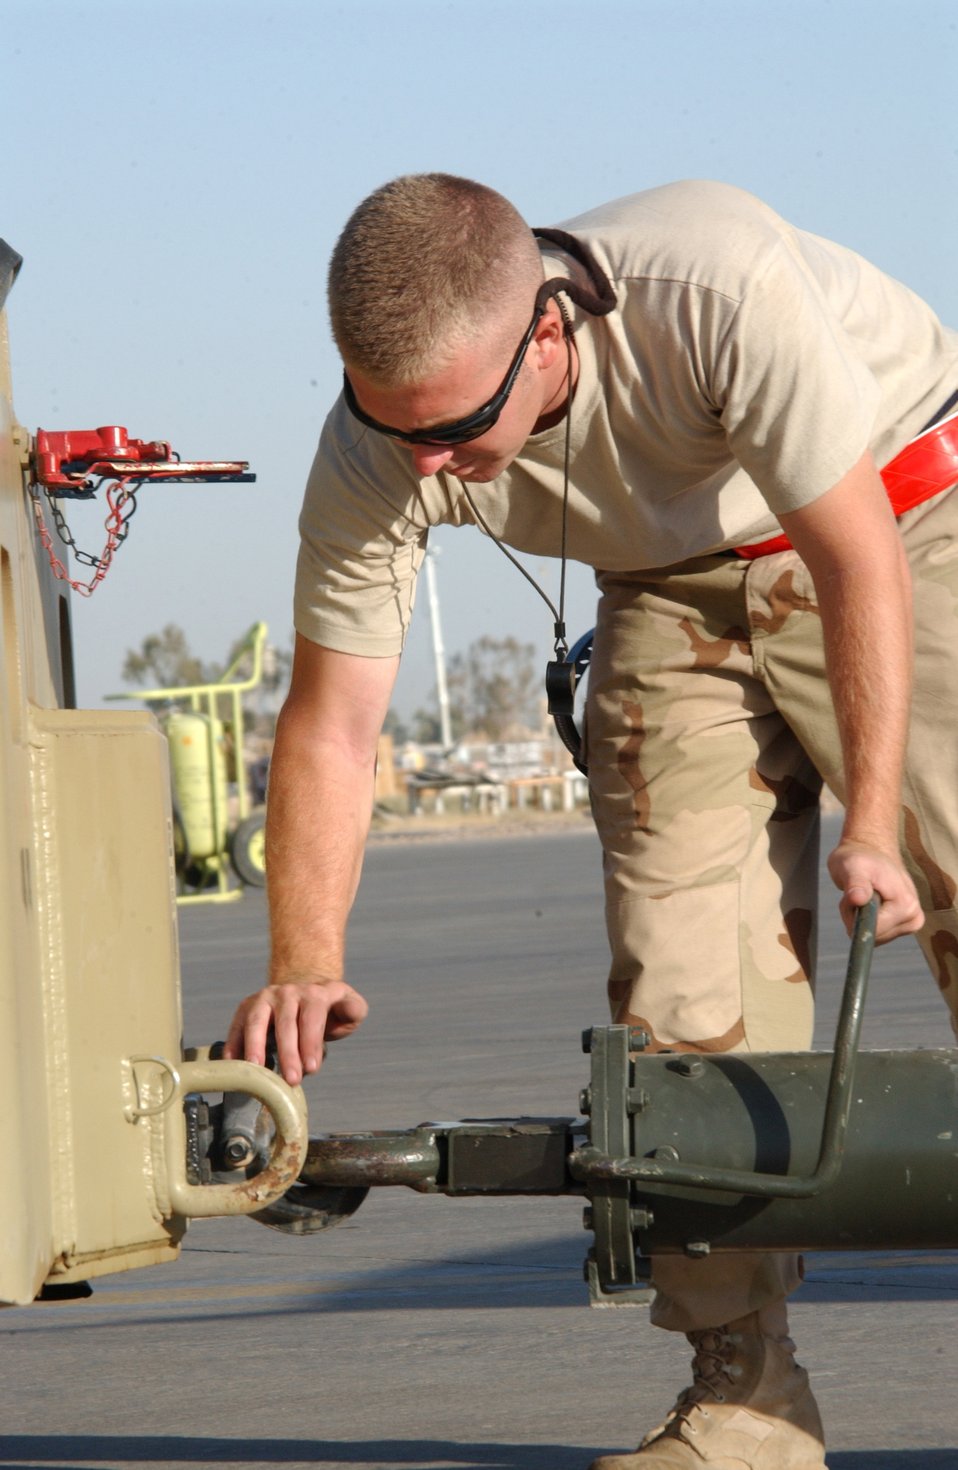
Tigers give Falcons flight

Staff Sgt. Kenny McDonald gets ready to tow an F-16 Fighting Falcon to the tarmac for an engine test at Balad Air Base, Iraq. The sergeant is a crew chief with the 332nd Expeditionary Aircraft Maintenance Squadron's aircraft maintenance unit.